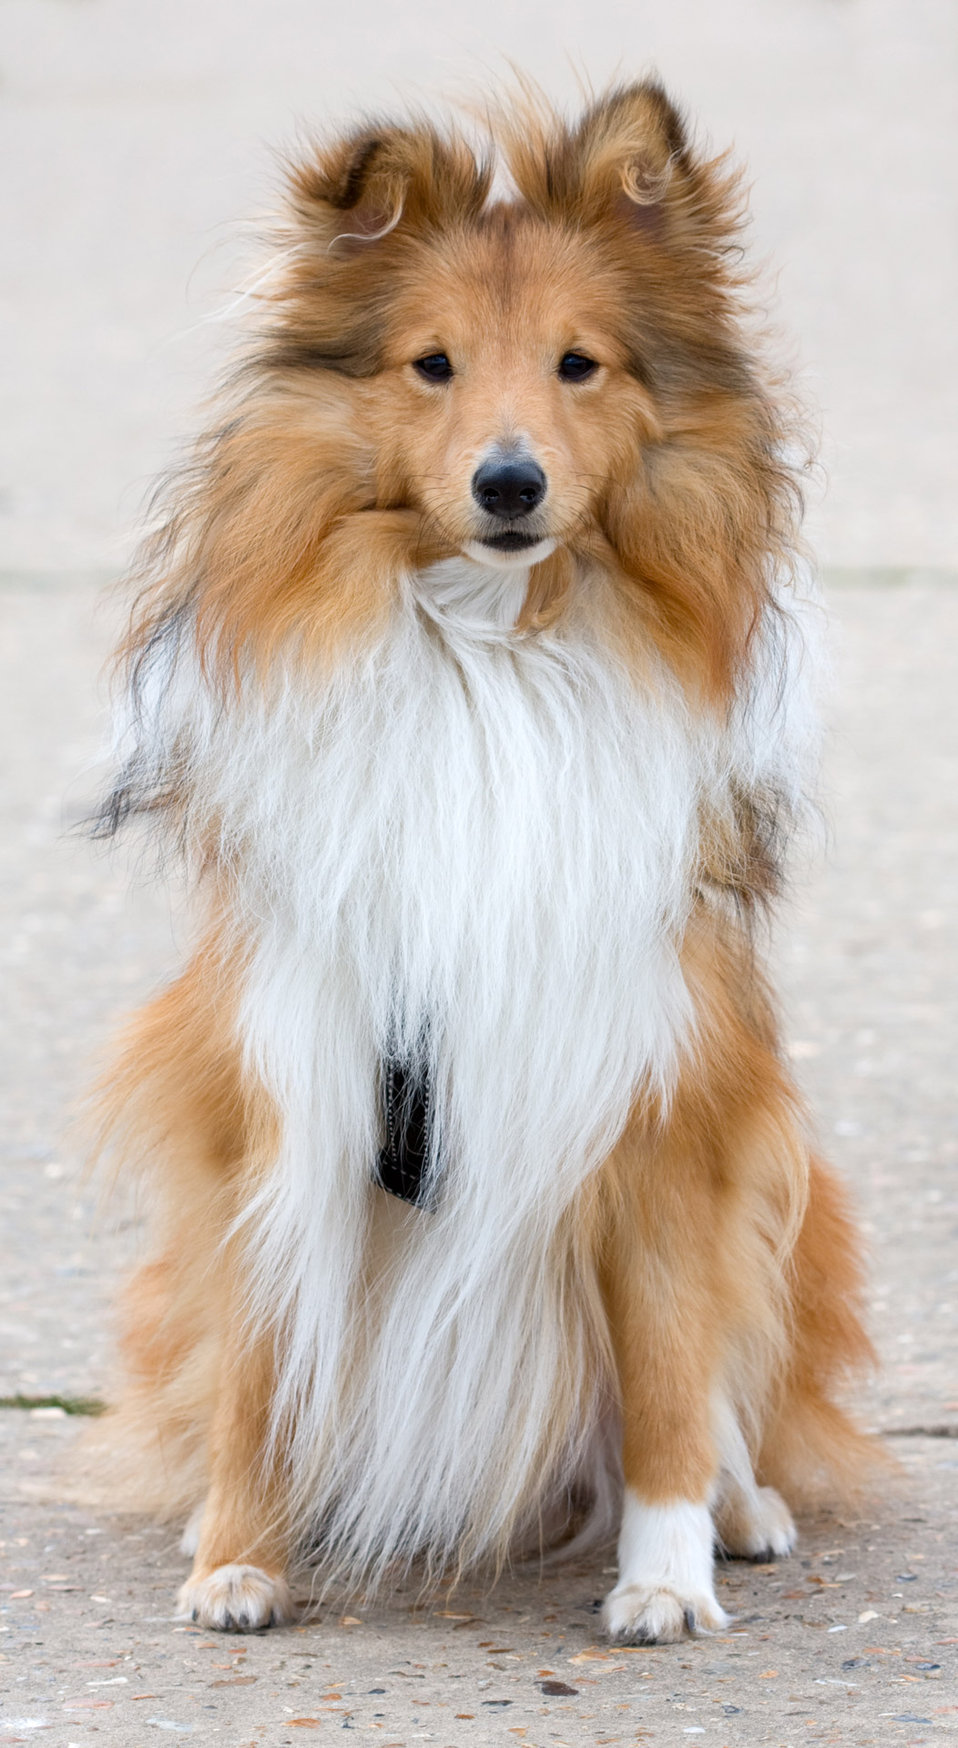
Dog sitting pretty

Cute shetland sheepdog, sheltie dog sitting portrait.